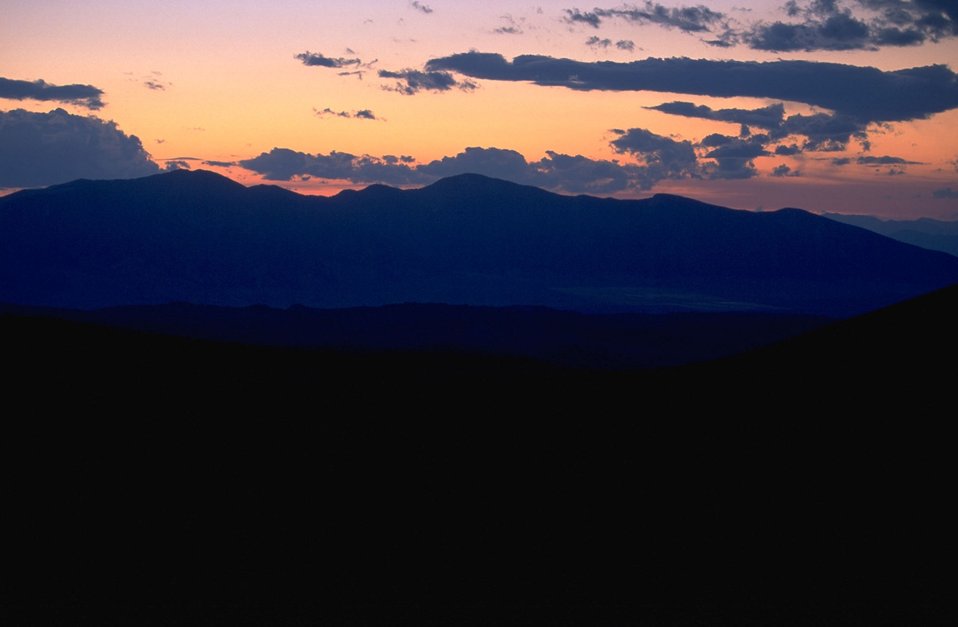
Silhouette of hills against the evening sky